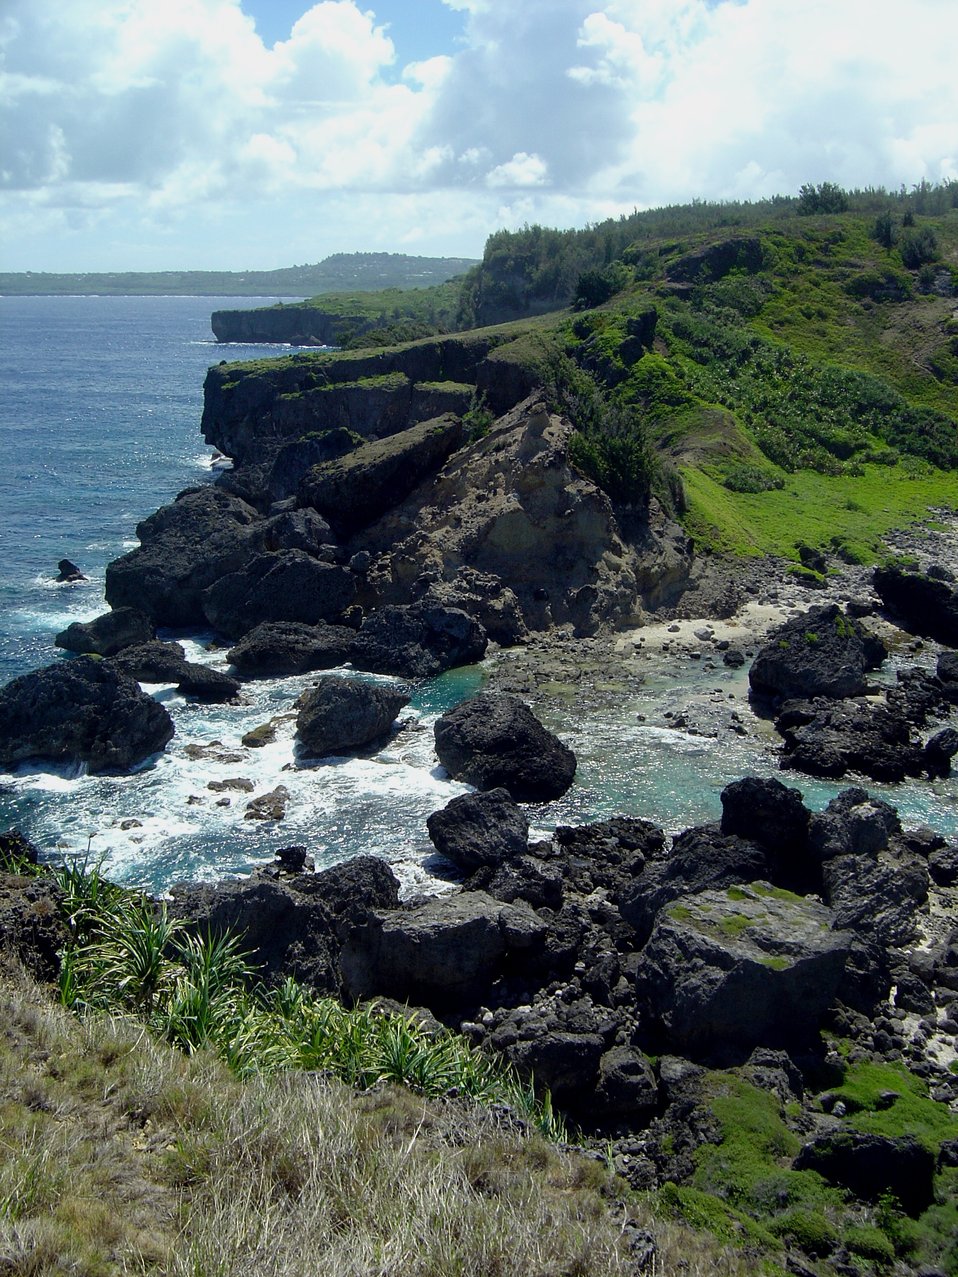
Coast near Forbidden Island, Saipan.